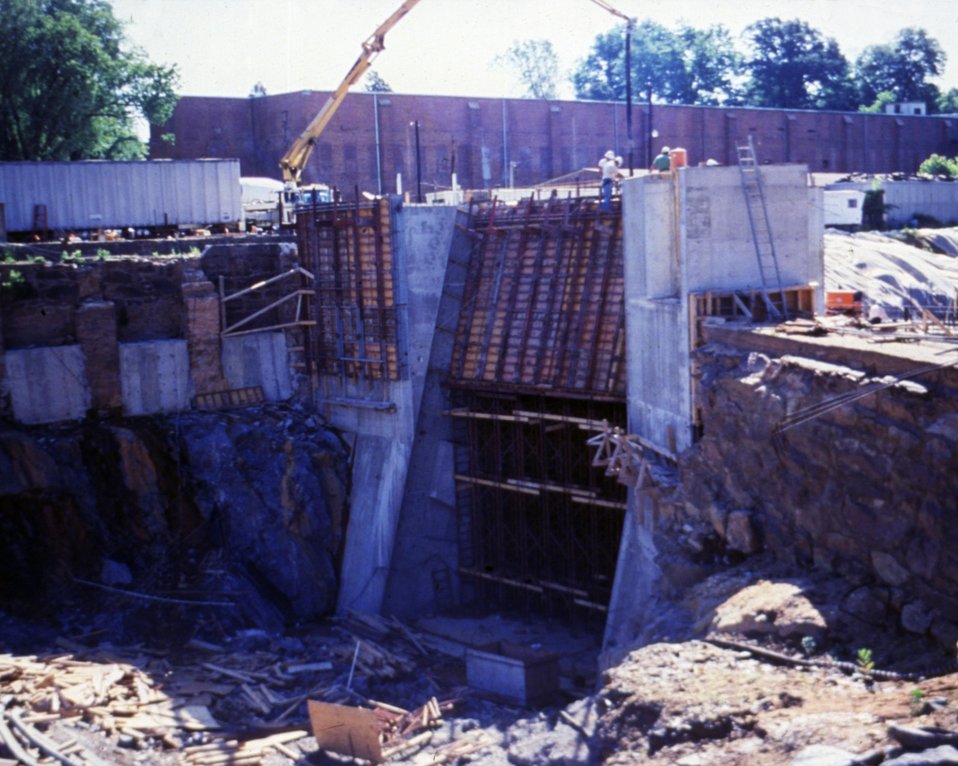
INLET AREA DURING CONSTRUCTION.

THE DOE SMALL-SCALE HYDROPOWER PROGRAM CONSISTS OF 19 PROJECTS AND DEMONSTRATES THE VIABILITY OF SMALL-SCALE HYDRO-POWER WITH AVAILABLE TECHNOLOGY. THE BROAD RIVER PROJECT, BEGUN IN JANUARY, 1983, WENT ON LINE DECEMBER 27, 1987. UTILIZING ONE OPEN-PIT TUBULAR TURBINE THAT PRODUCES A MAXIMUM OF 4,140 KILOWATTS, THE DAM PROVIDES A GROSS HEAD OF 20.2 FEET WITH AN ANNUAL STREAM FLOW OF 2,472 CFS.